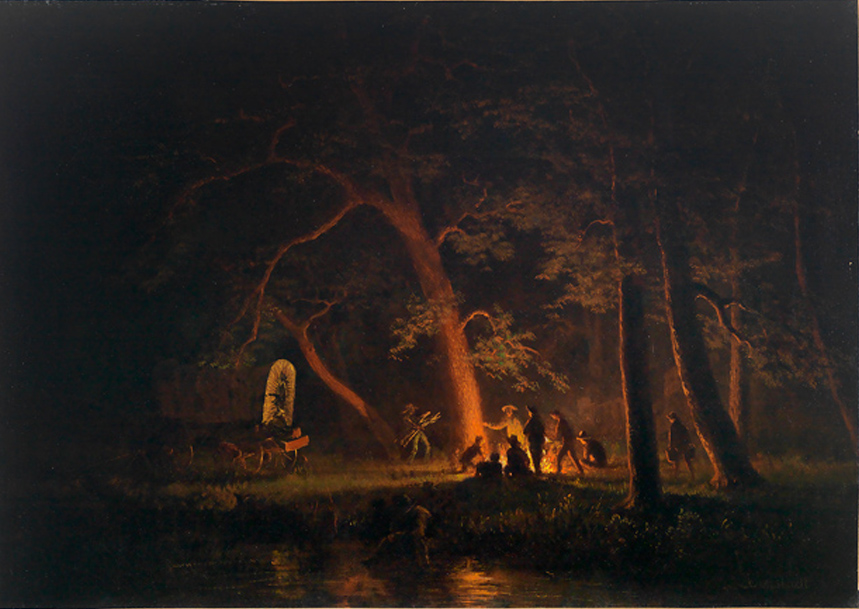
Campfire (Albert Bierstadt), 1863